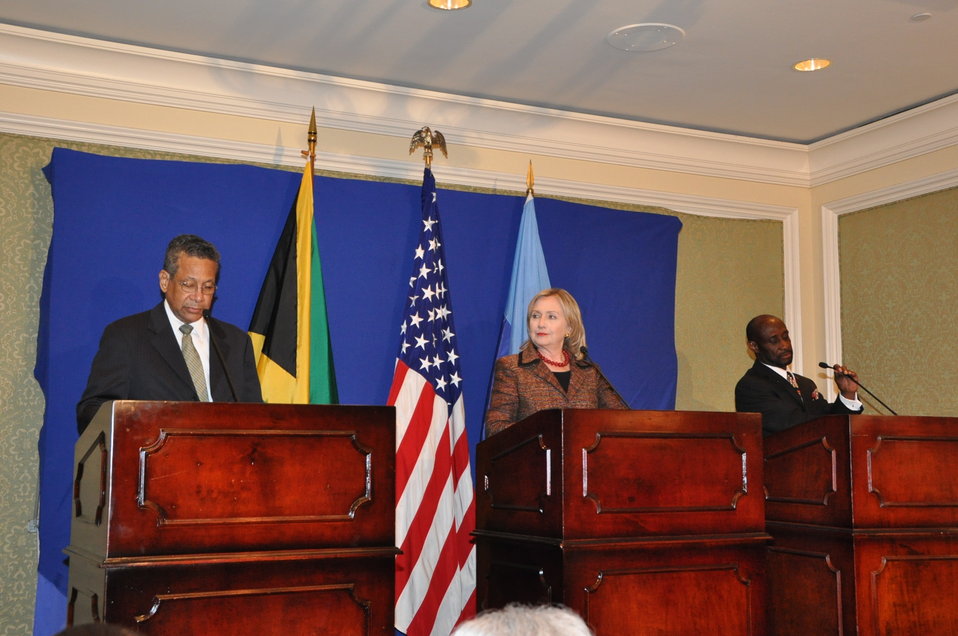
Secretary Clinton, Jamaican Foreign Minister Baugh, and St. Kitts and Nevis Deputy Prime Minister Condor Hold a Press Conference

U.S. Secretary of State Hillary Rodham Clinton, center, Jamaican Foreign Minister Kenneth Baugh, left, and St. Kitts and Nevis Deputy Prime Minister Sam Condor, right, hold a press conference in Montego Bay, Jamaica, on June 22, 2011.